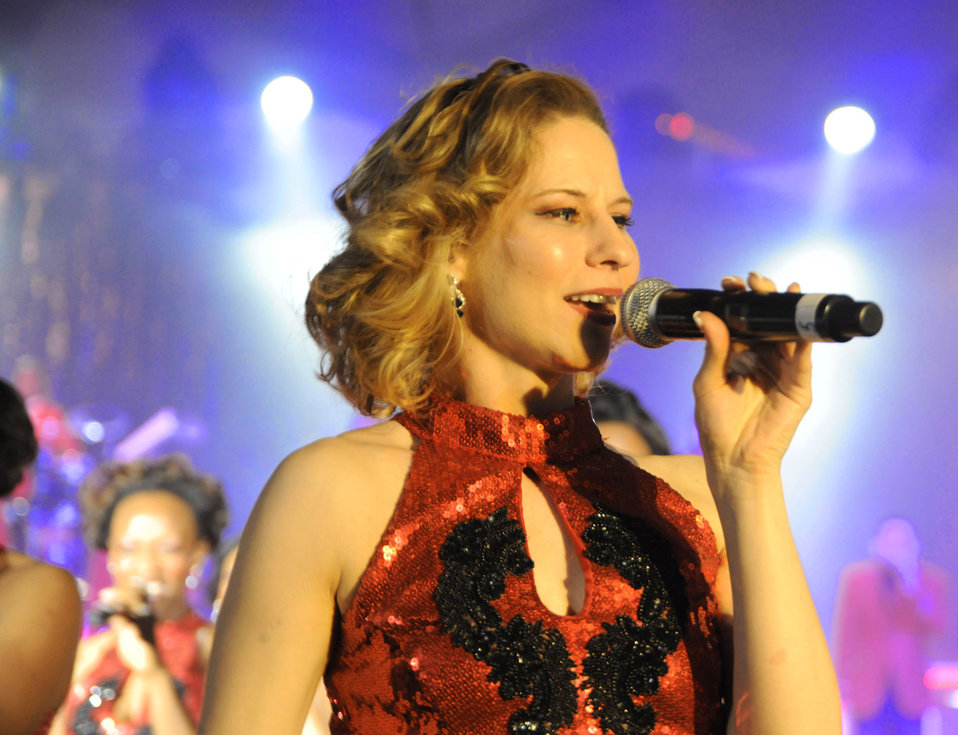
'Tops in Blue' perform overseas

Tech. Sgt. Katie Badowski performs to Airmen and their families June 22, 2010, at the gym at Royal Air Force Croughton, England. Sergeant Badowski is assigned to the 446th Services Flight at McChord Air Force Base, Wash.